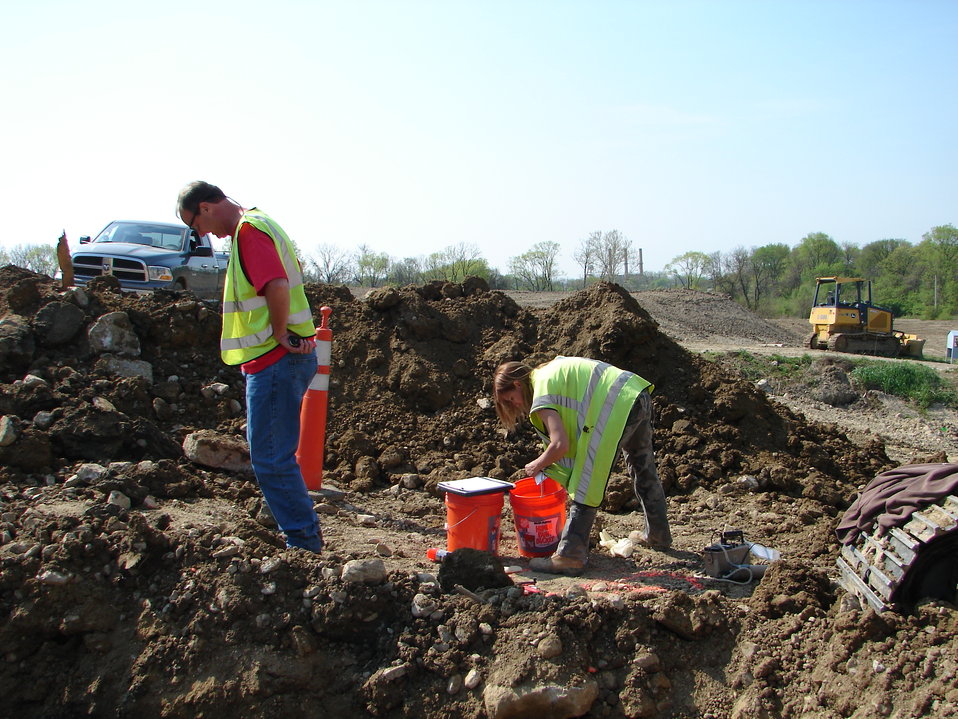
Recovery Act Project Brings End to Mound Site Cleanup ActivitiesRecovery Act Project Brings End to Mound Site Cleanup Activities

The Recovery Act invested $17.9 million in the completion of EM’s legacy cleanup activities at the Mound Site in 2010.
Recovery Act workers disposed nearly 20,000 cubic meters of soil and demolition debris in the cleanup, which focused on the Operable Unit-1, a former mixed-waste landfill at the 306-acre site. The Recovery Act cleanup was the final remediation project at Mound.
The federal government is in the process of transferring ownership of the site to the Mound Development Corporation, a community reuse organization.